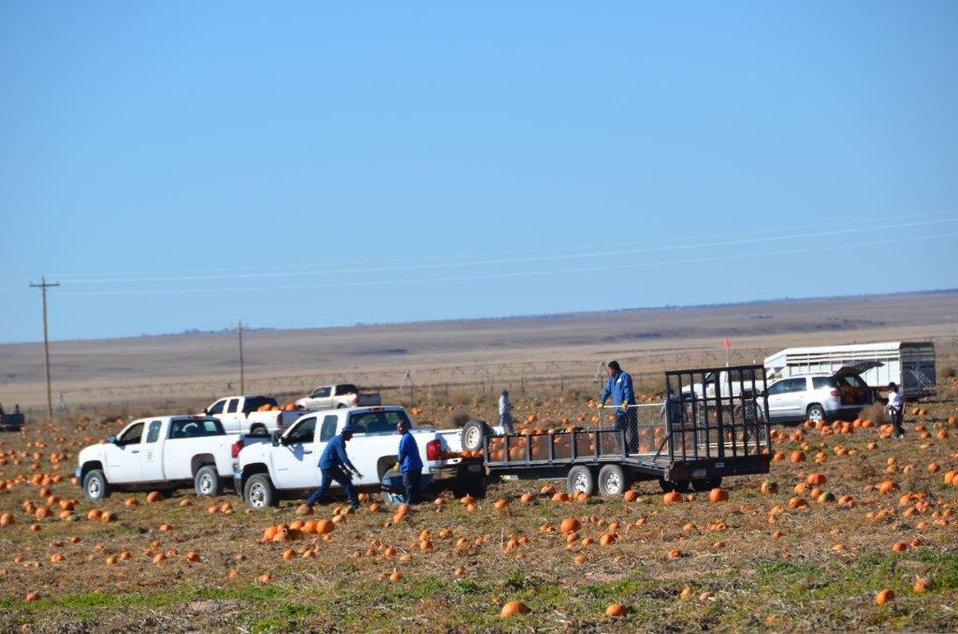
Pumpkin Gleaning 2

200 volunteers from local Native American organizations, Isleta, Santa Clara, Zuni, San Ildifanzo, Northern Jickarilla and Santo Domingo Pueblos, several youth organizations, students from the University of New Mexico and U.S. Department of Agriculture (USDA) Farm Service Agency (FSA) Forest Service (FS), Natural Resources Conservation Service (NRCS) and Rural Development (RD) employees glean leftover pumpkins from the farm of John and Dianne Aday to give to needy children. Students in the Torrance and Albuquerque County schools had smiles on their faces as trucks pulled up and delivered pumpkins to the students. The pumpkins also made their way to pediatric units at local hospitals, the St. Felix Pantry, a local food bank and youth centers in six counties around New Mexico. University of New Mexico students carved and decorated the pumpkins and delivered them to sick children.